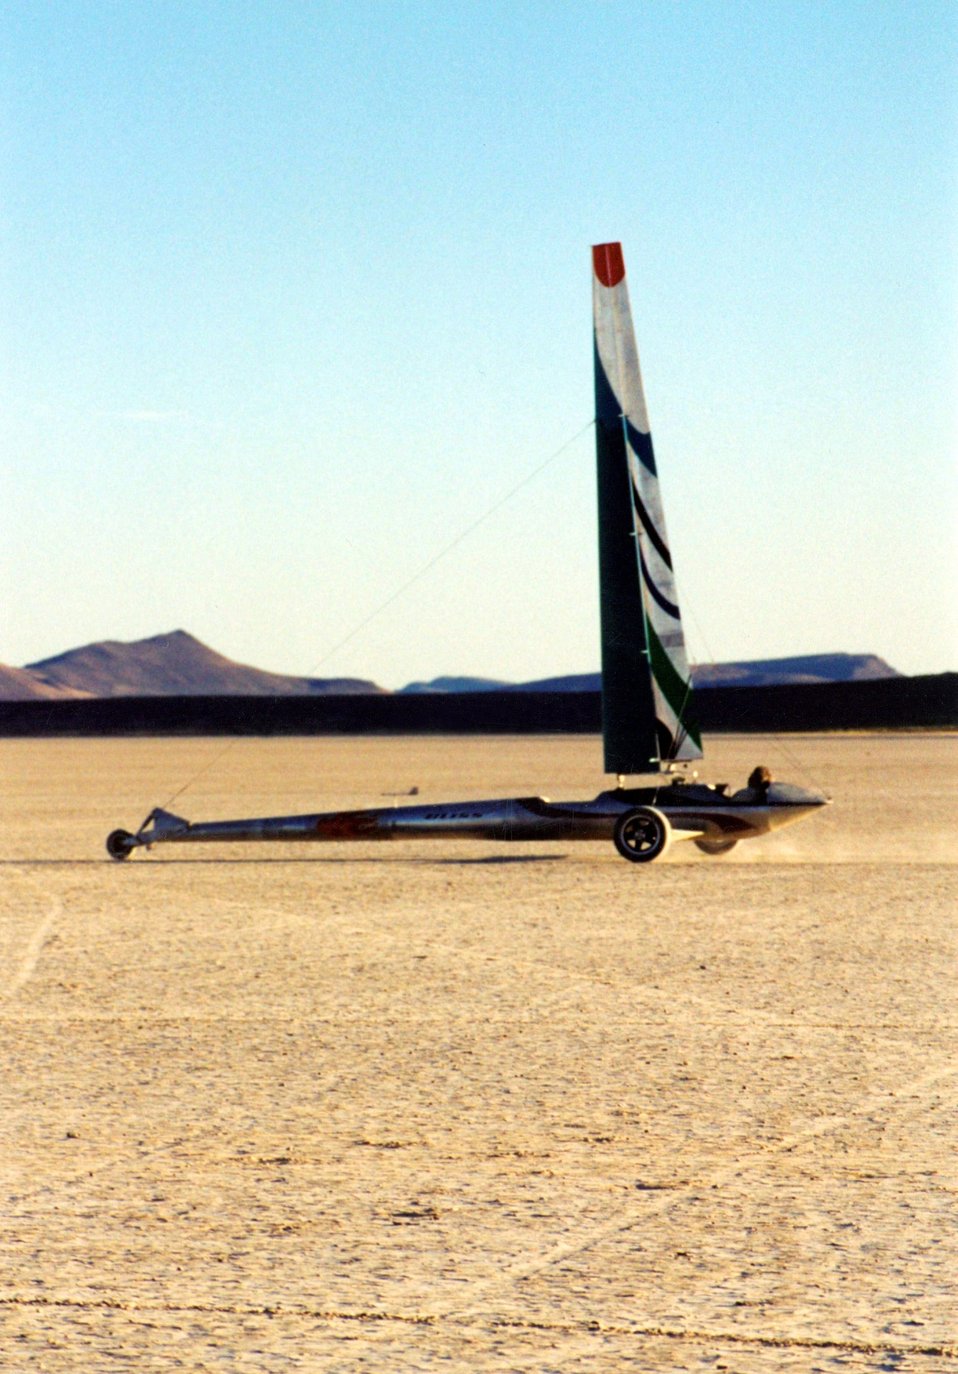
Sand Saling on the Alvord Desert in eastern Oregon.